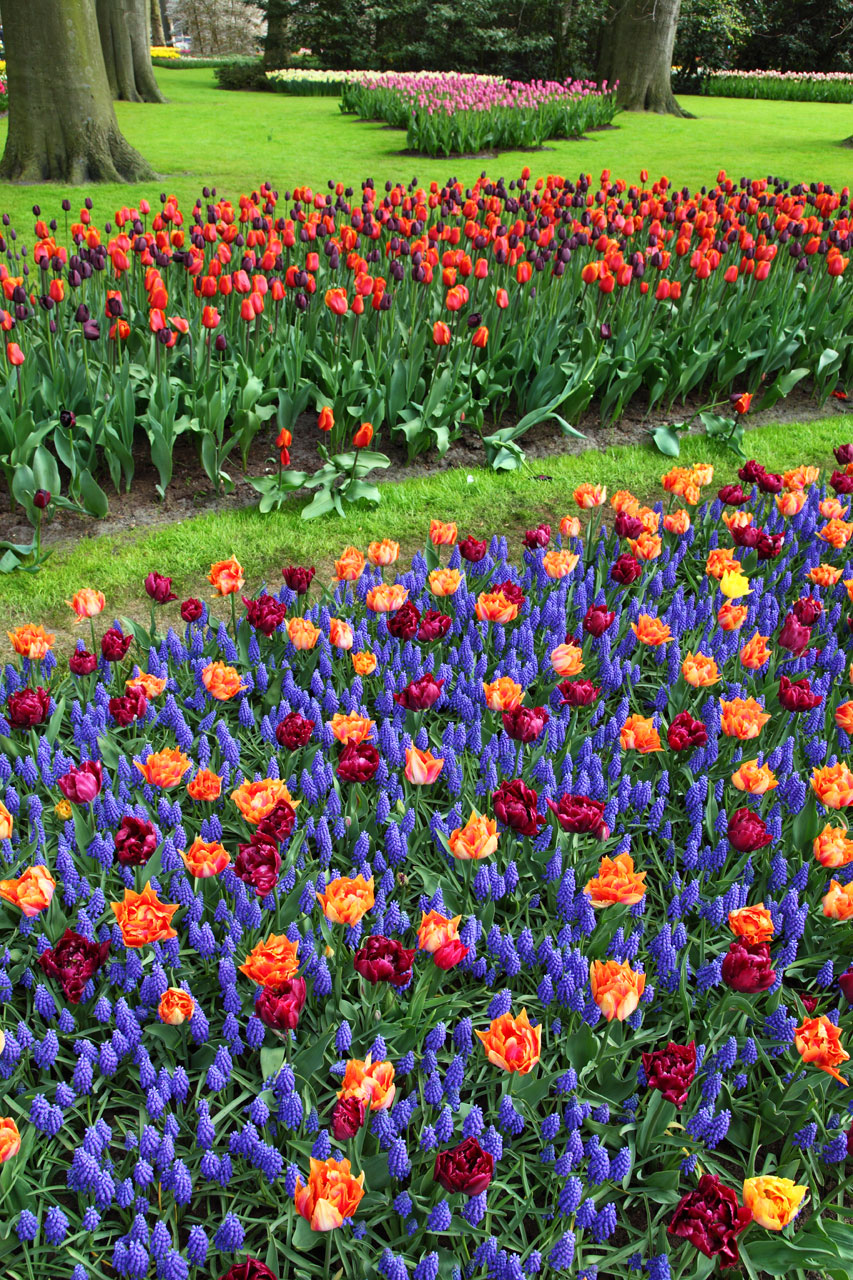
Colorful flowers bloom

Colorful tulips and grape hyacinths in keukenhof.